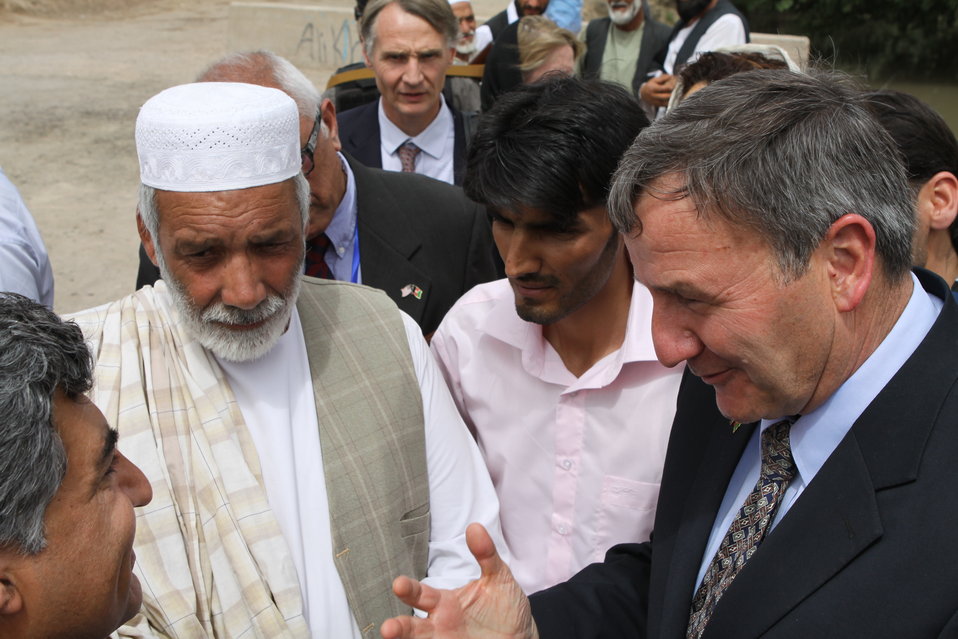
100525 Hirat Marble Conference 630